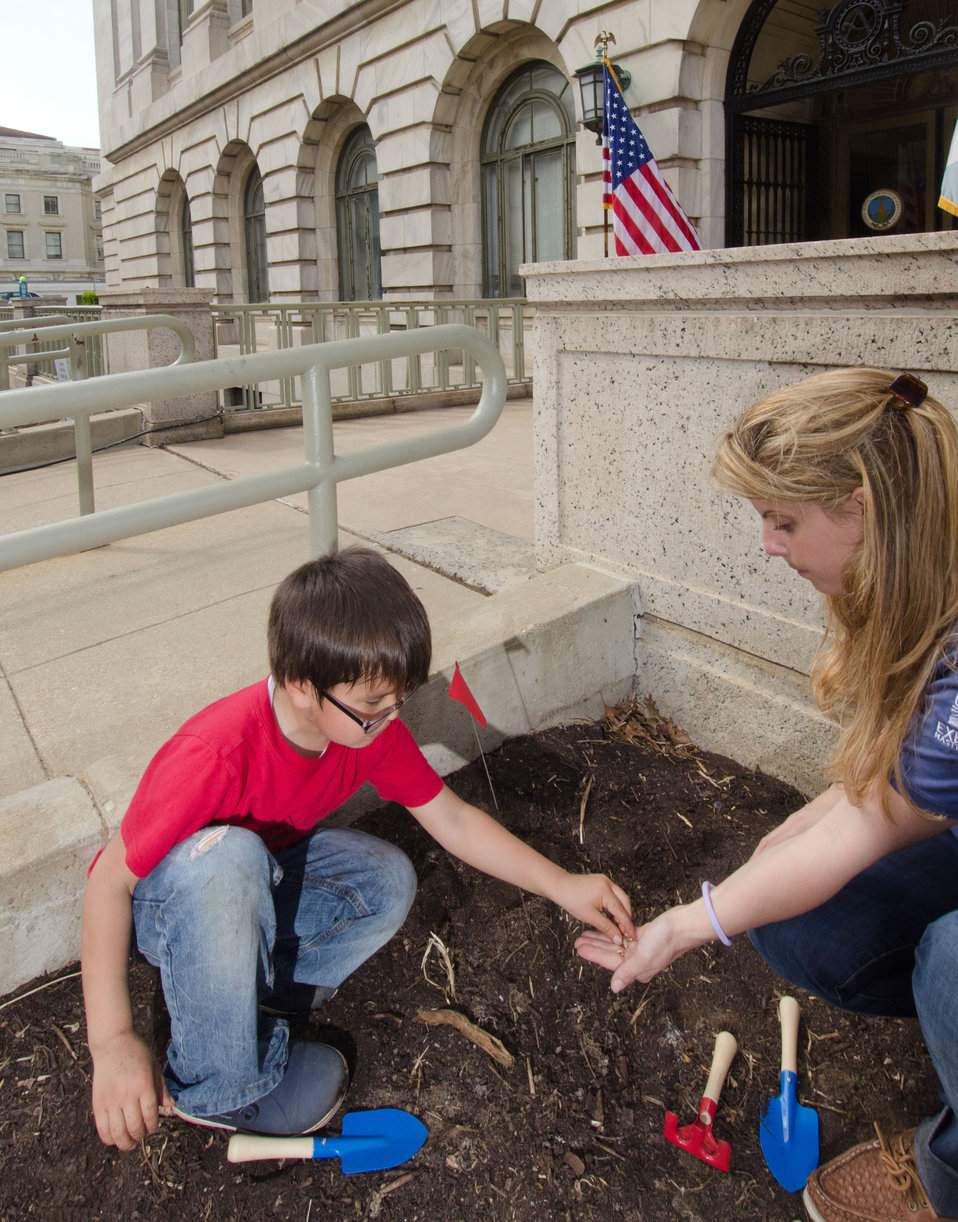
Annie Ceccarinion (right) helped a young gardener on Wednesday, April 27, 20ll in Washington, DC, as he and more than 30 other students from Eastern and Western Tribes, Southeast Alaska, and Tuba City, Arizona planted vegetable seeds that are indigenous to North America, in the Roots of American Agriculture garden, part of the Headquarters’ People’s Garden and the U.S. Department of Agriculture.